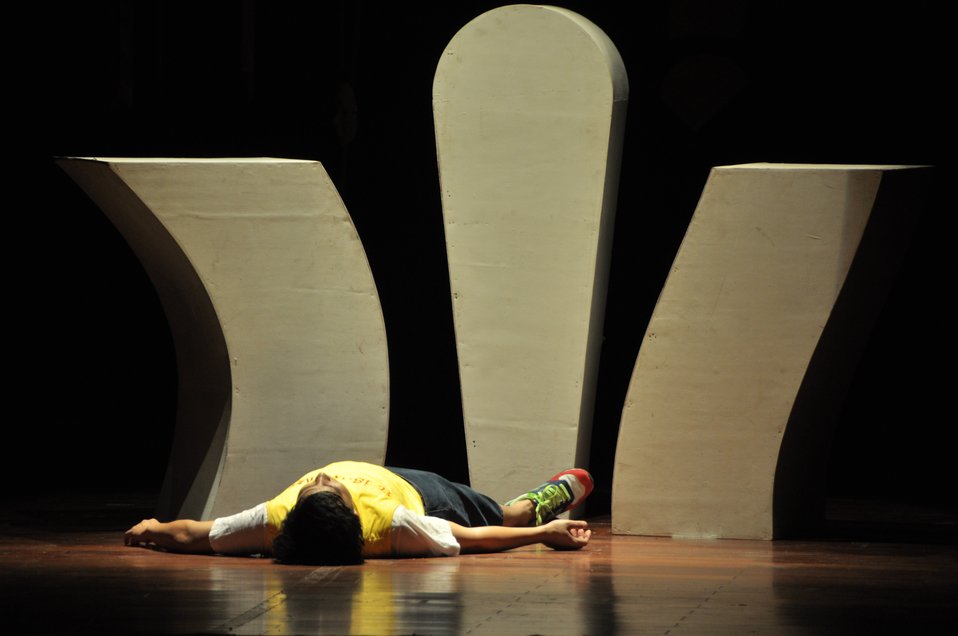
PEPFAR Musical Questions and Exclamations

Hanoi, May 17, 2013